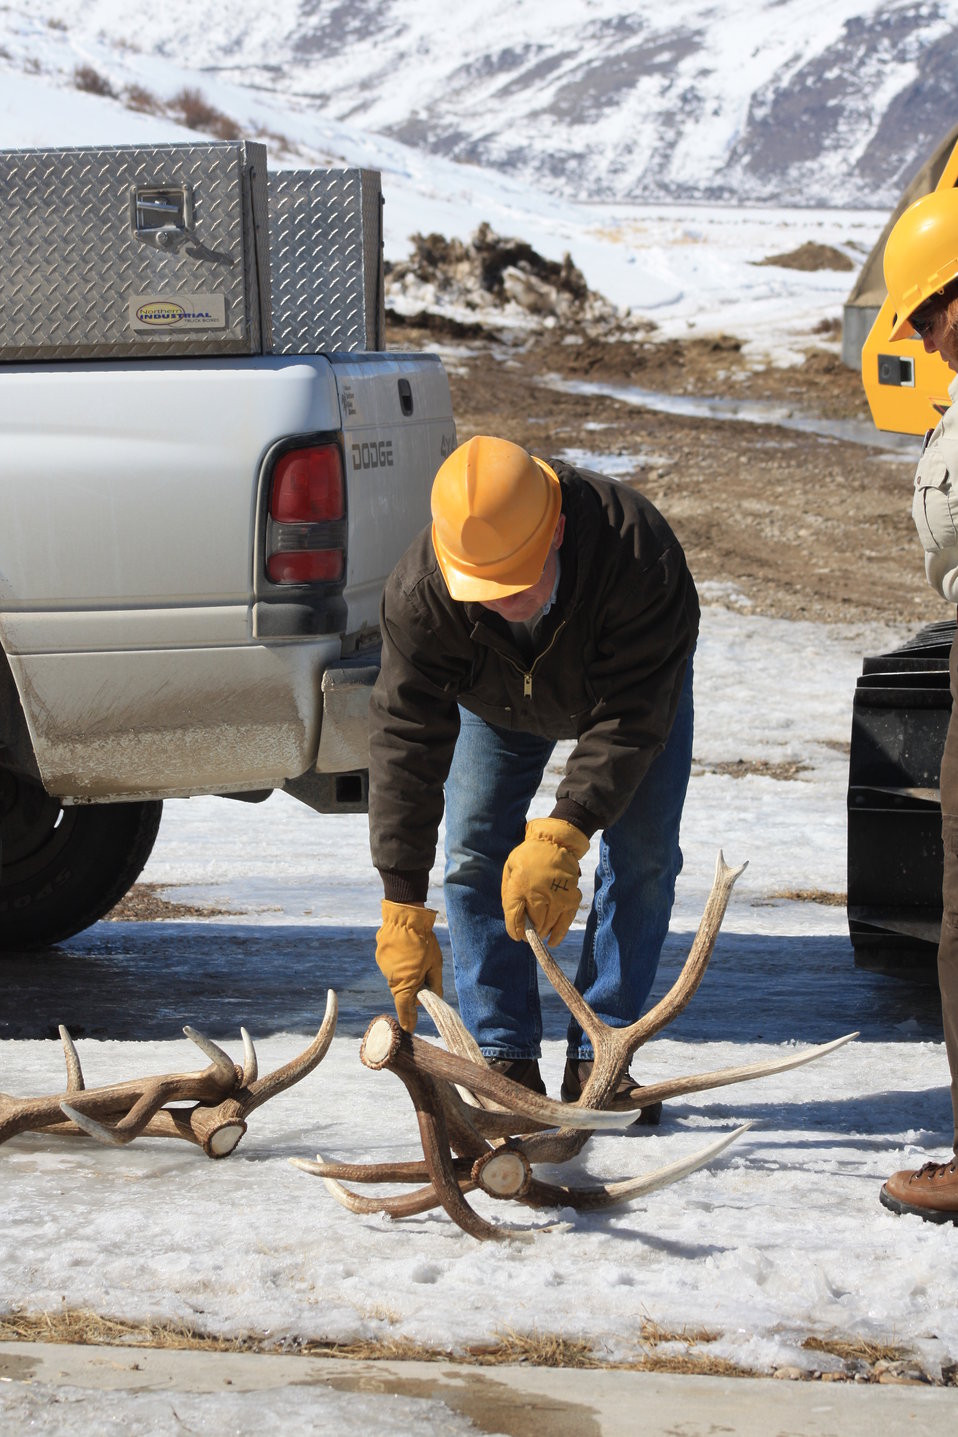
Antler Collection Begins in Early March

National Elk Refuge staff begin collecting antlers as soon as they start dropping, or 'shed,' in early March. Not only does this reduce the incidents of illegal poaching, but it helps avoid damage to equipment that could occur if the antlers are accidentally run over during refuge management operations like supplemental feeding, spring harrowing, or irrigating.

Credit: USFWS / Ann Hough, National Elk Refuge volunteer